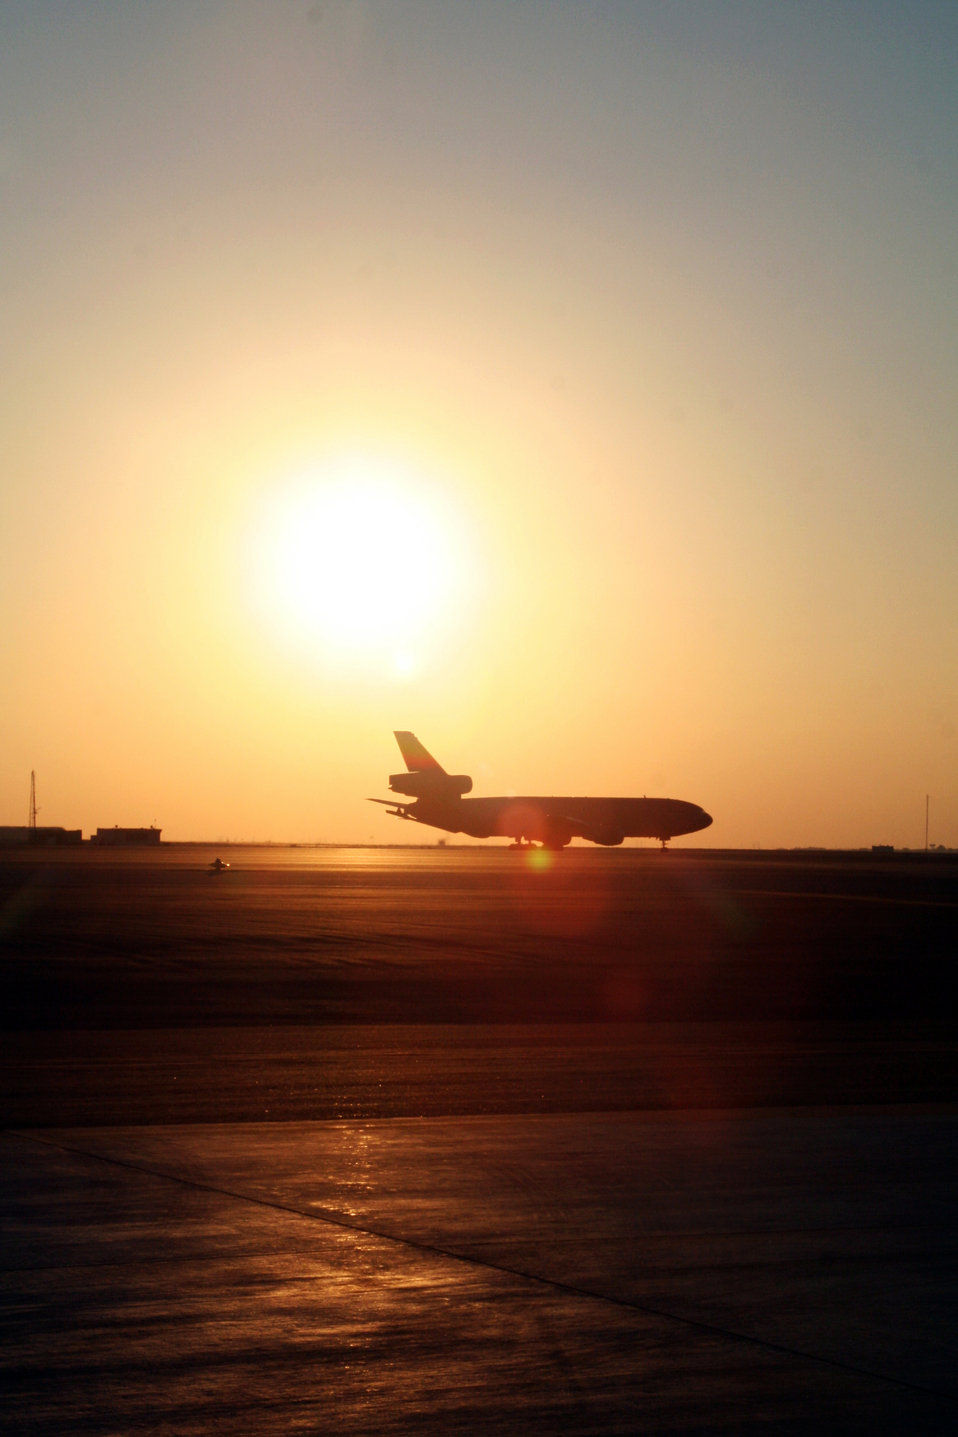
Extending the fight

A KC-10 Extender taxies on the flightline Dec. 30, 2009, at an air base in Southwest Asia. KC-10s are deployed to the 380th Air Expeditionary Wing to provide air refueling support.